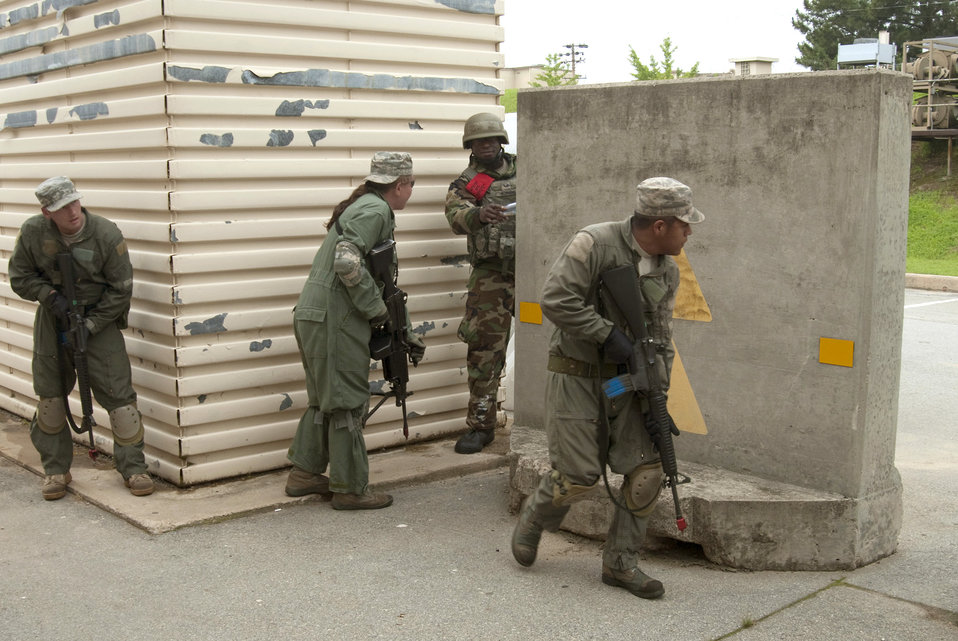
Kunsan Airmen test their skills